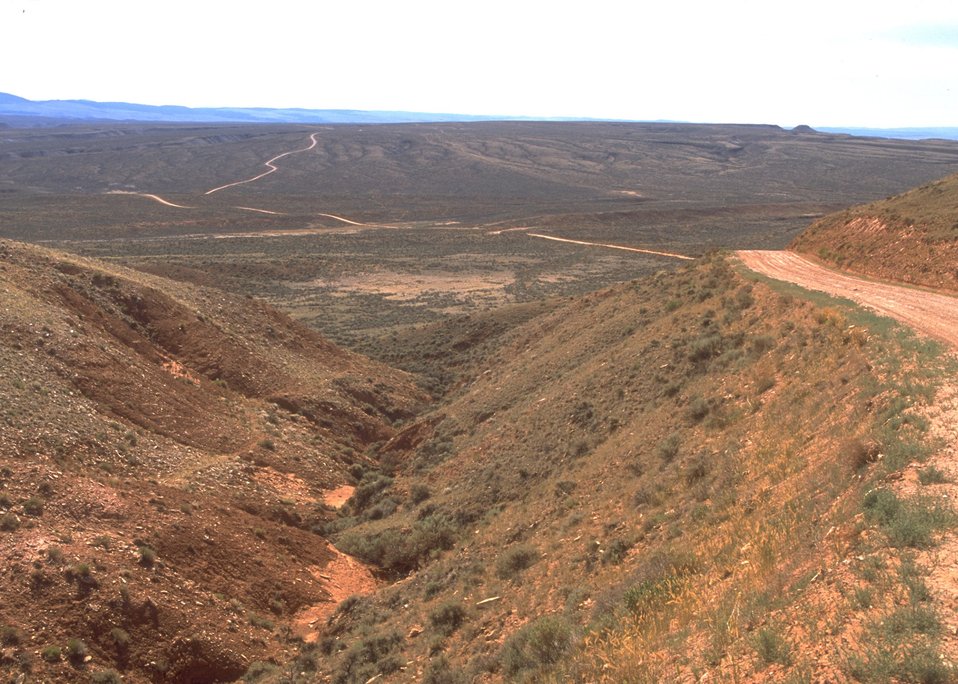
View along the Red Gulch/Alkali Back Country Byway, Worland Field Office.